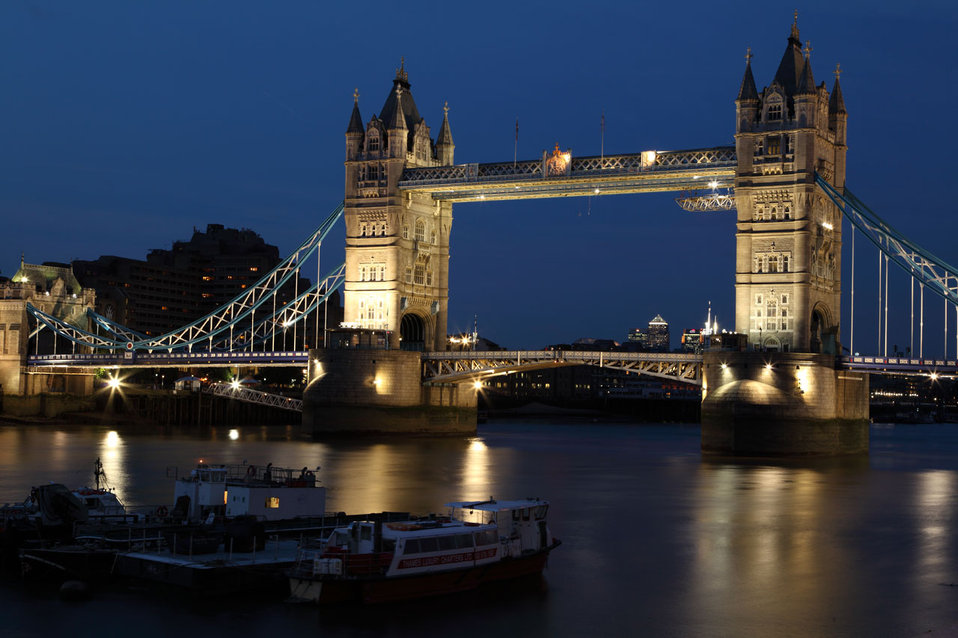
Tower bridge at night

Tower bridge in london at night.